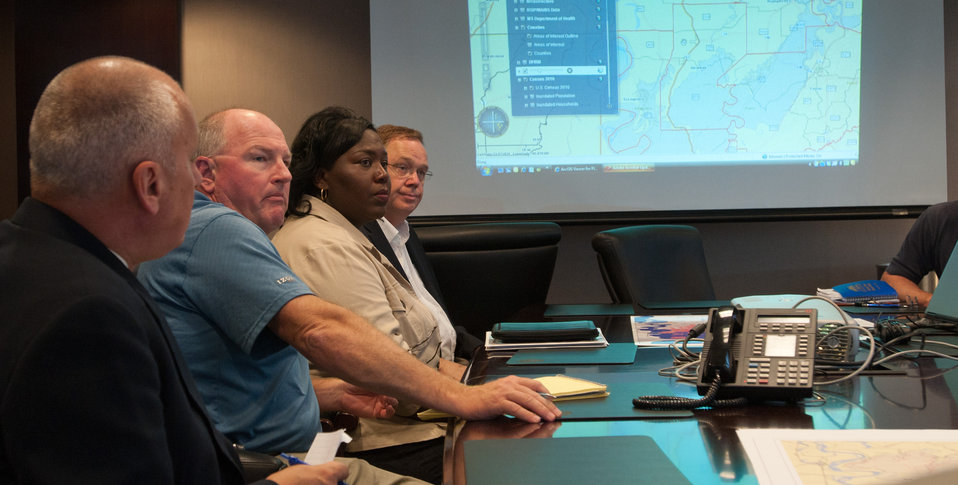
Agriculture Undersecretary for Rural Development Dallas Tonsager (right) and Mississippi State Director for Rural Development Trina George (second from right) listen to the assembled state and national department and agency representatives Mississippi emergency housing task force that met in one of the governor’s meeting rooms on Thursday, May 19, 2011, to present the current and anticipated emergency housing needs of people flooded out by the Mississippi River system who have no where to stay until waters recede.